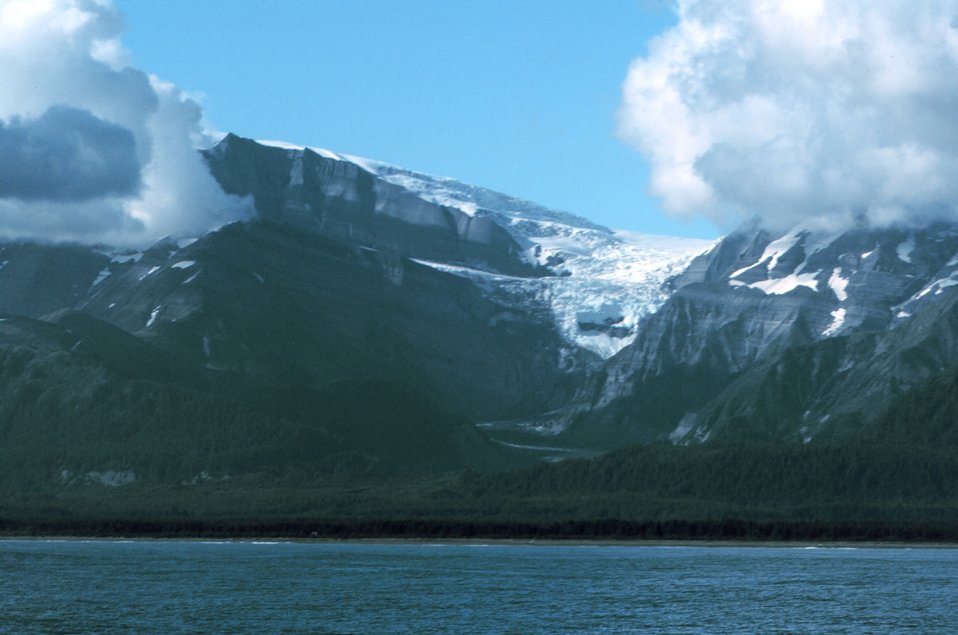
A hanging glacial valley in Tann Fjord.